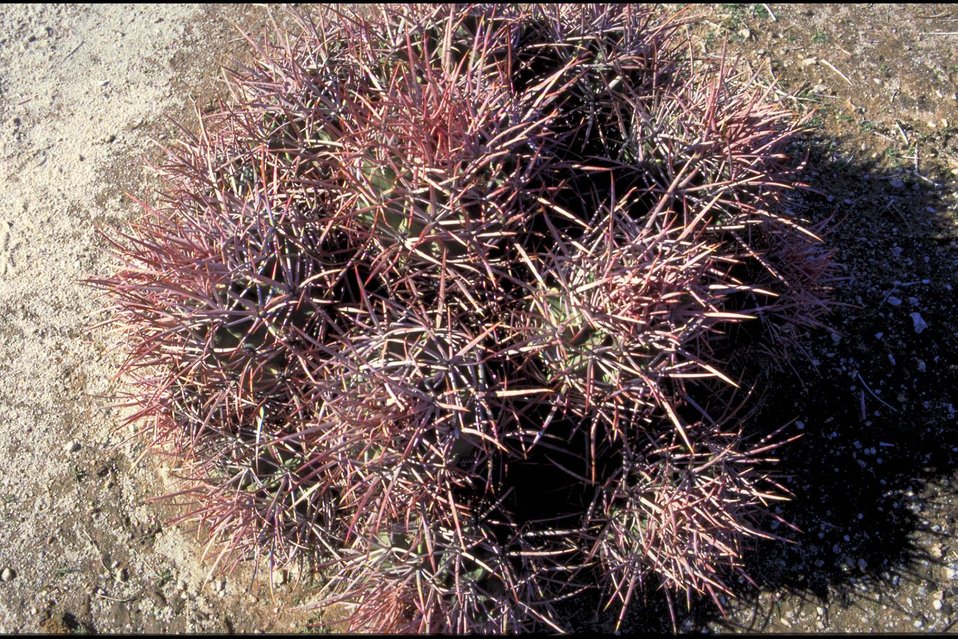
Barrel cactus in the Arizona desert